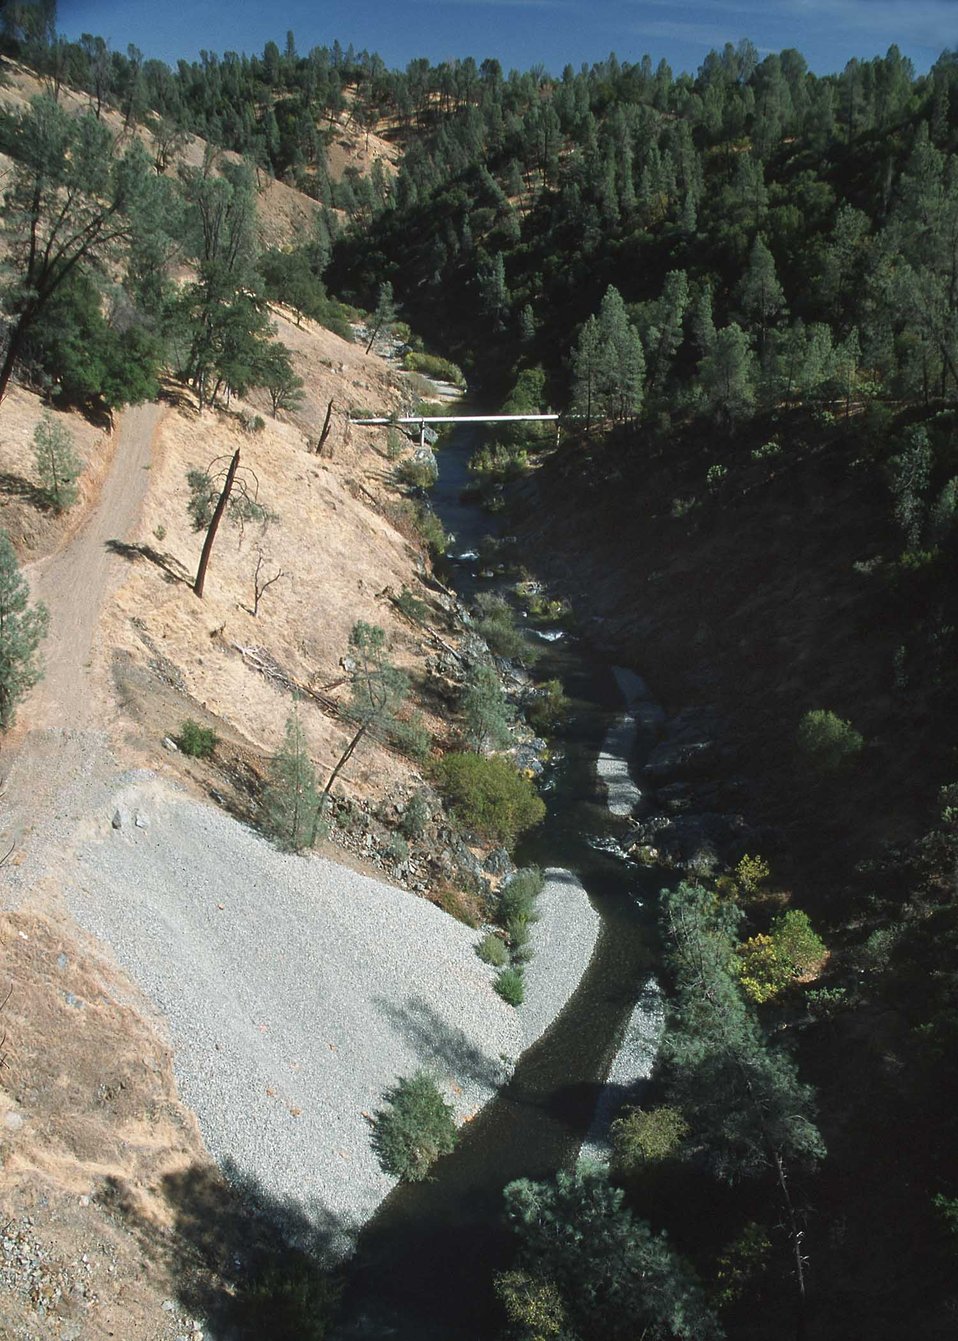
Far view of gravel injection site below bridge.